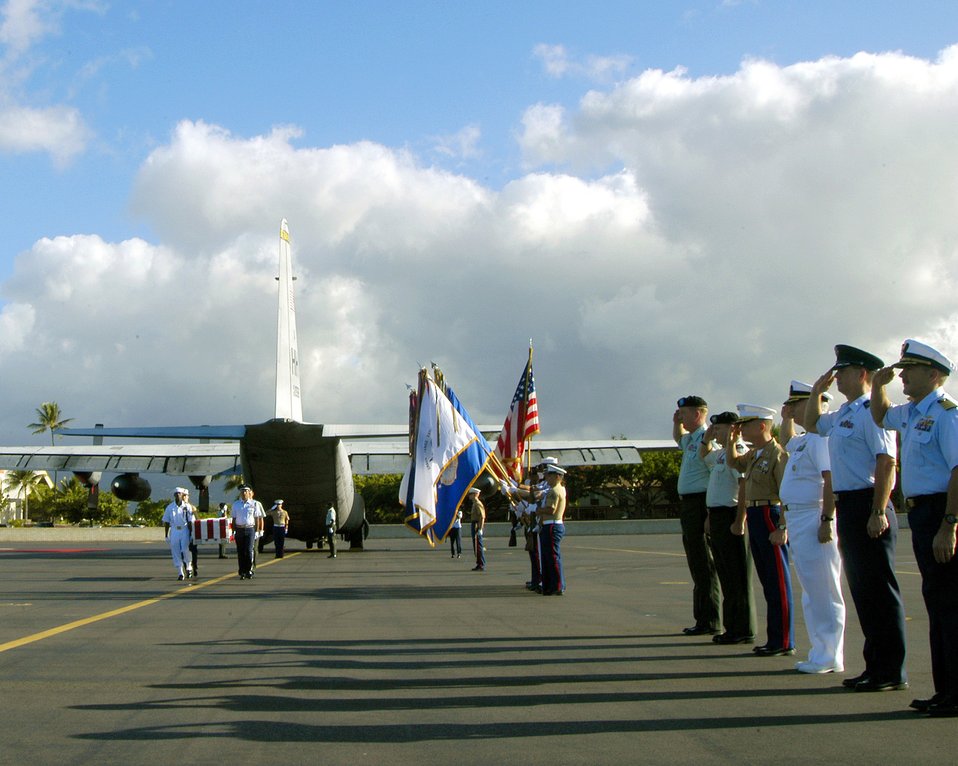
Coming home

HICKAM AIR FORCE BASE, Hawaii (AFPN) -- The Joint POW/MIA Accounting Command held a repatriation ceremony here Dec. 9. The ceremony was for a U.S. servicemember lost during the Vietnam War. The remains were recovered last month by a JPAC team. The JPAC's mission is to achieve the fullest possible accounting of all Americans missing as a result of the nation's previous conflicts.